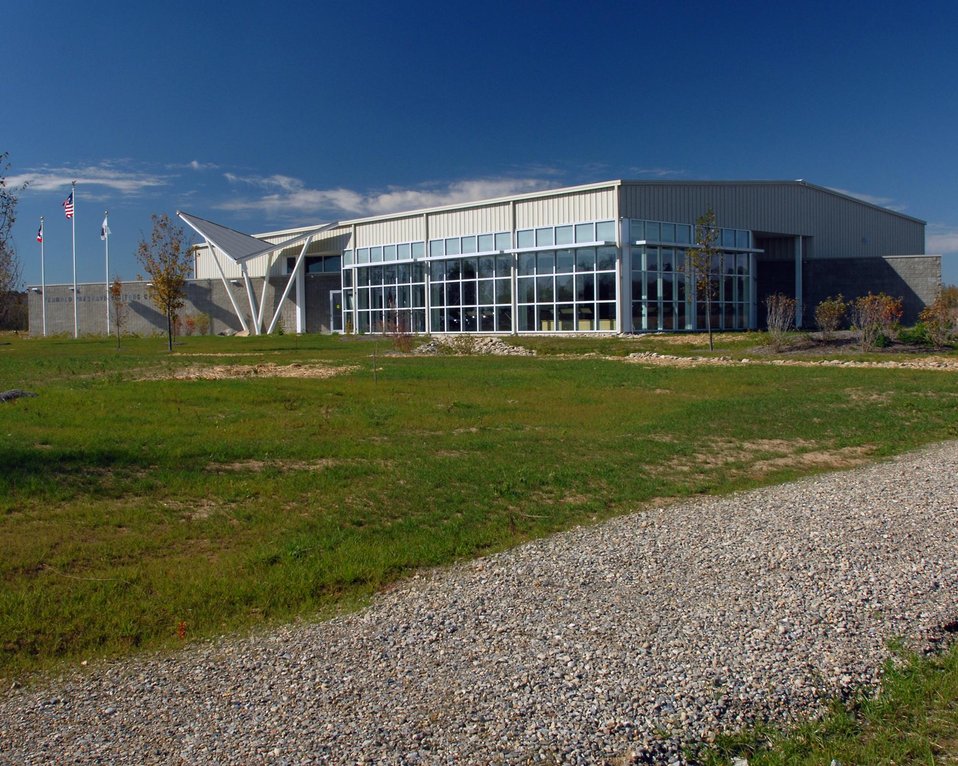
Southeast corner of the Fernald Preserve Visitor Center, the first building in Ohio to receive platinum-level certification from the U.S. Green Building Council, The organization's highest certification.